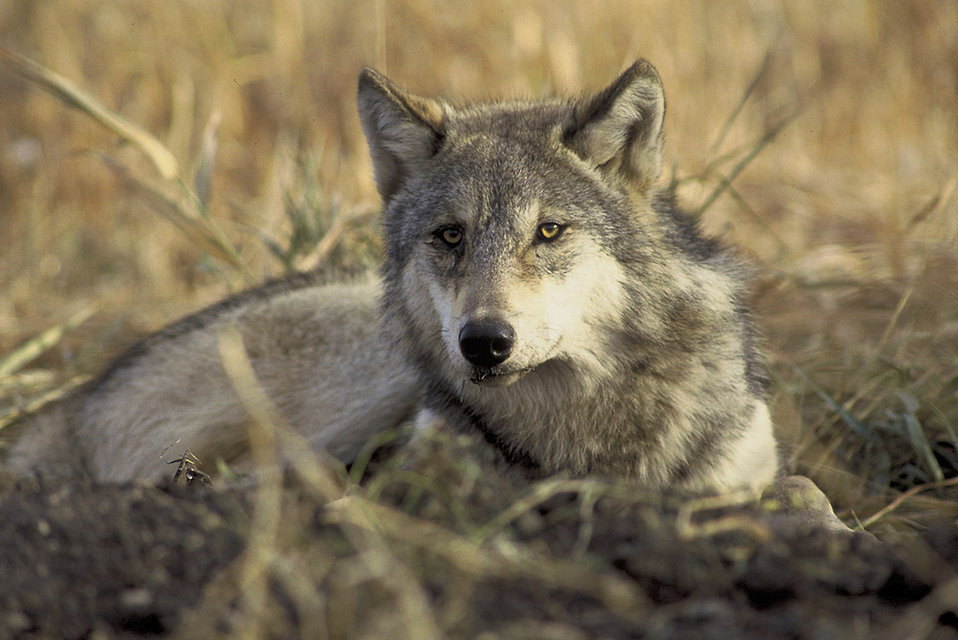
Gray wolf

Scientific name: Canis lupus
Status: Endangered, Non-Essential Experimental Population and Delisted